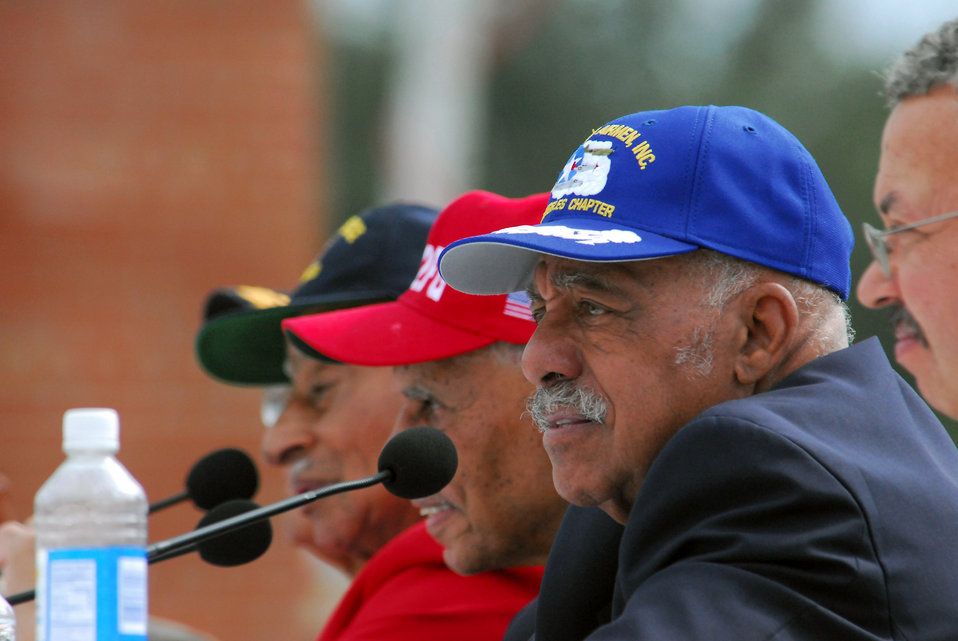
Historic homecoming for Tuskegee Airmen as site opens

Retired Lt. Col. William Holloman, one of the documented original Tuskegee Airmen, participates in a panel discussion prior to the opening ceremony of the Tuskegee Airmen National Historic Site Oct. 10 at Moton Field, Ala.